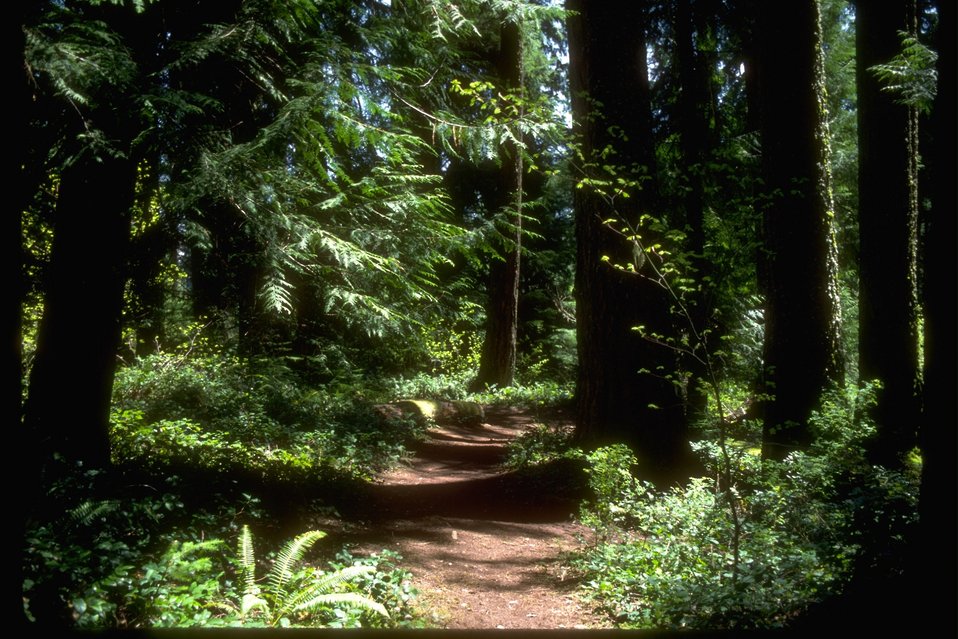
Old Growth Ridge Trail at Whitaker Creek.